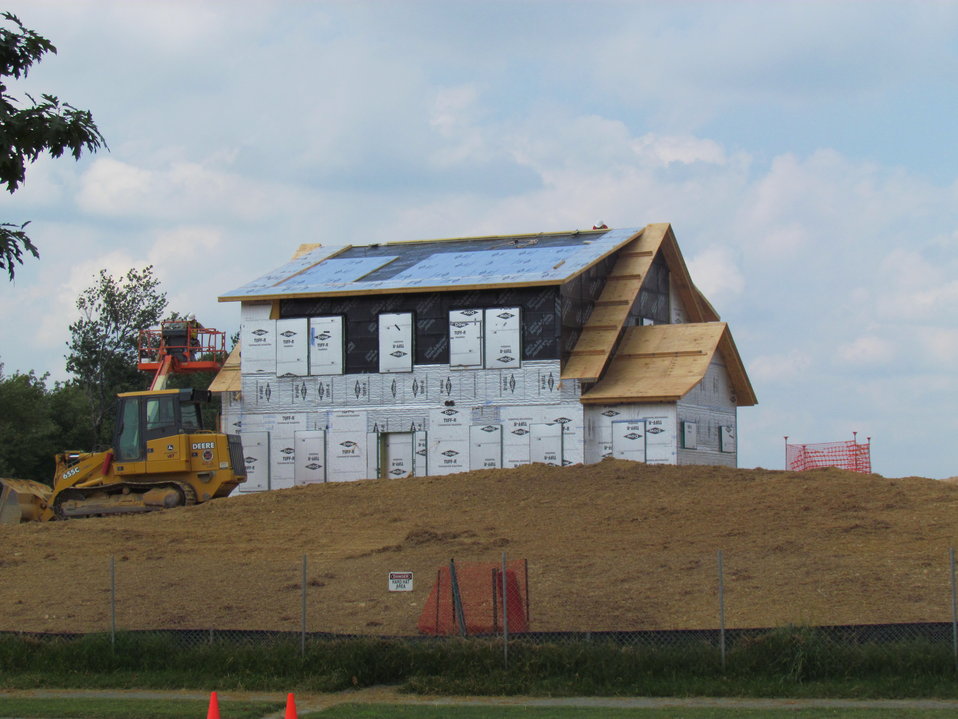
Net-Zero Energy Residential Test Facility - Photo showing partial installation of exterior wall and roof insulation.